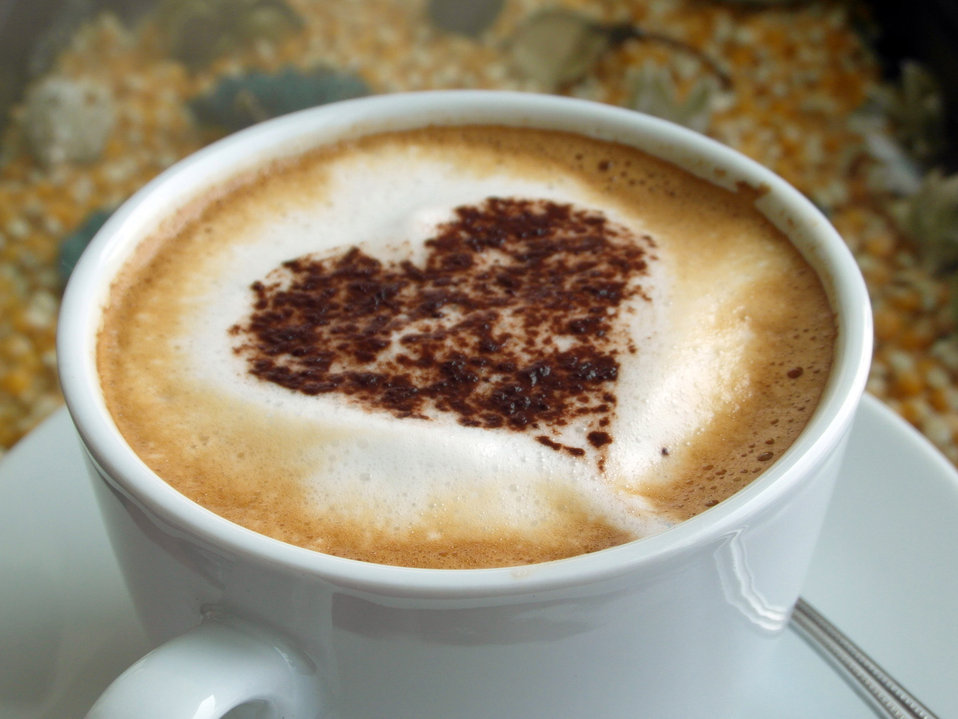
Coffee heart art

Latte with heart art.